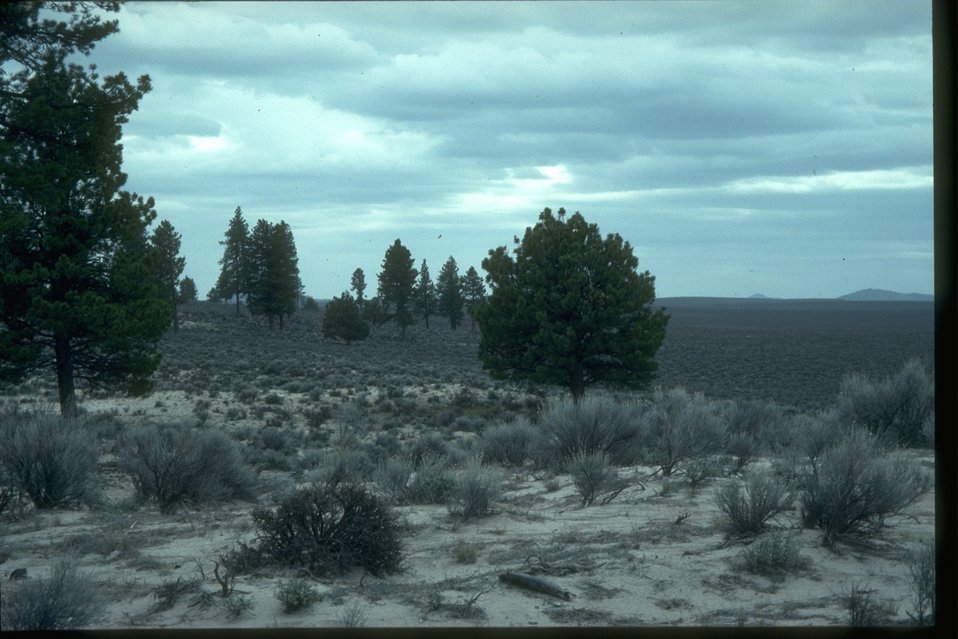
Lost Forest.